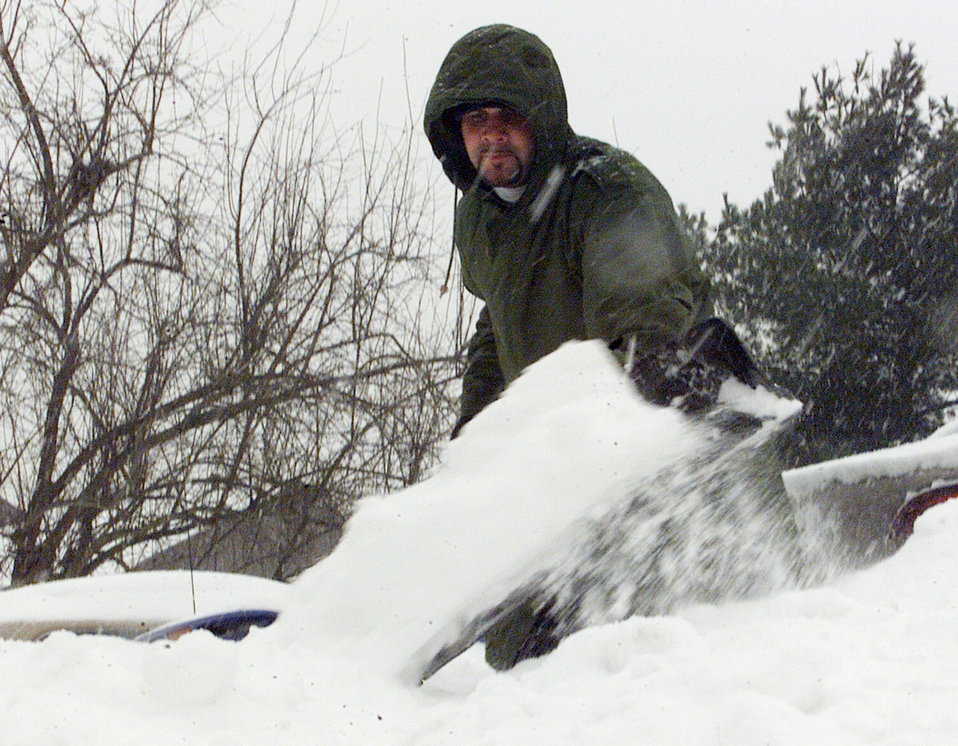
Snow daze

MCGUIRE AIR FORCE BASE, N.J. (AFPN) -- Tech. Sgt. Richard Ameigh heaves snow from behind his vehicle early Feb. 17 morning after a blizzard hit the Northeast. Ameigh, an Air Reserve Technician with the 514th Aircraft Generation Squadron here, was called in for emergency snow-removal duty to clear the flightline and main access on base.